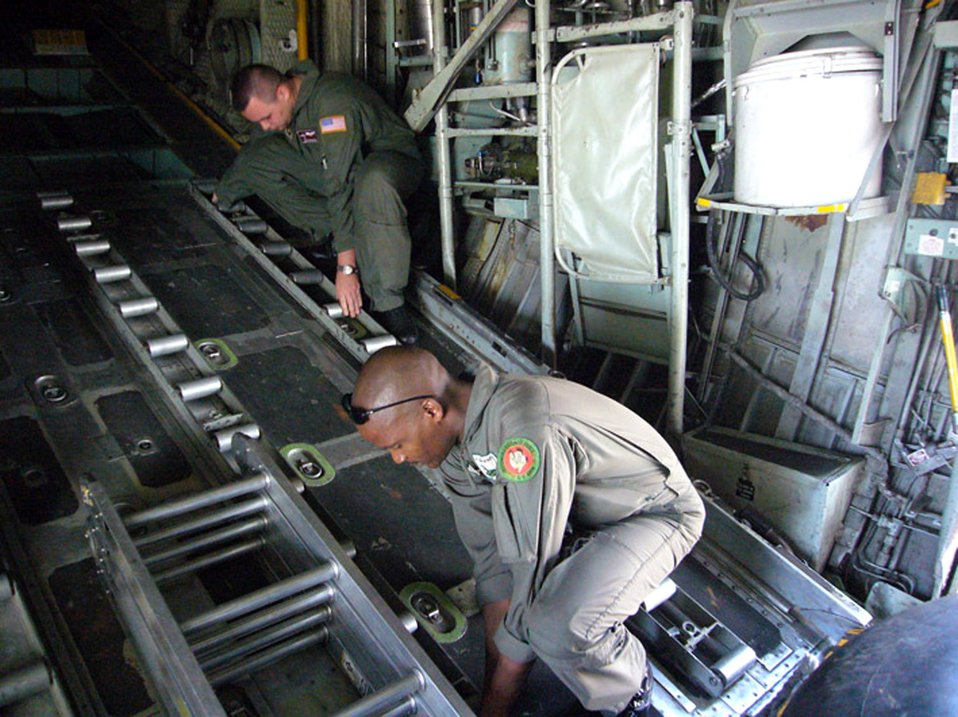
Ramstein flies with Botswana into Darfur

Botswana Defence Force Cpl. Ezekiel Merafe, C-130 loadmaster, and Air Force Staff Sgt. Vern Miles, 86th Operations Support Squadron C-130 loadmaster, prepare the back of a C-130 for cargo Sept. 24 at the Kigali International Airport in Rwanda.